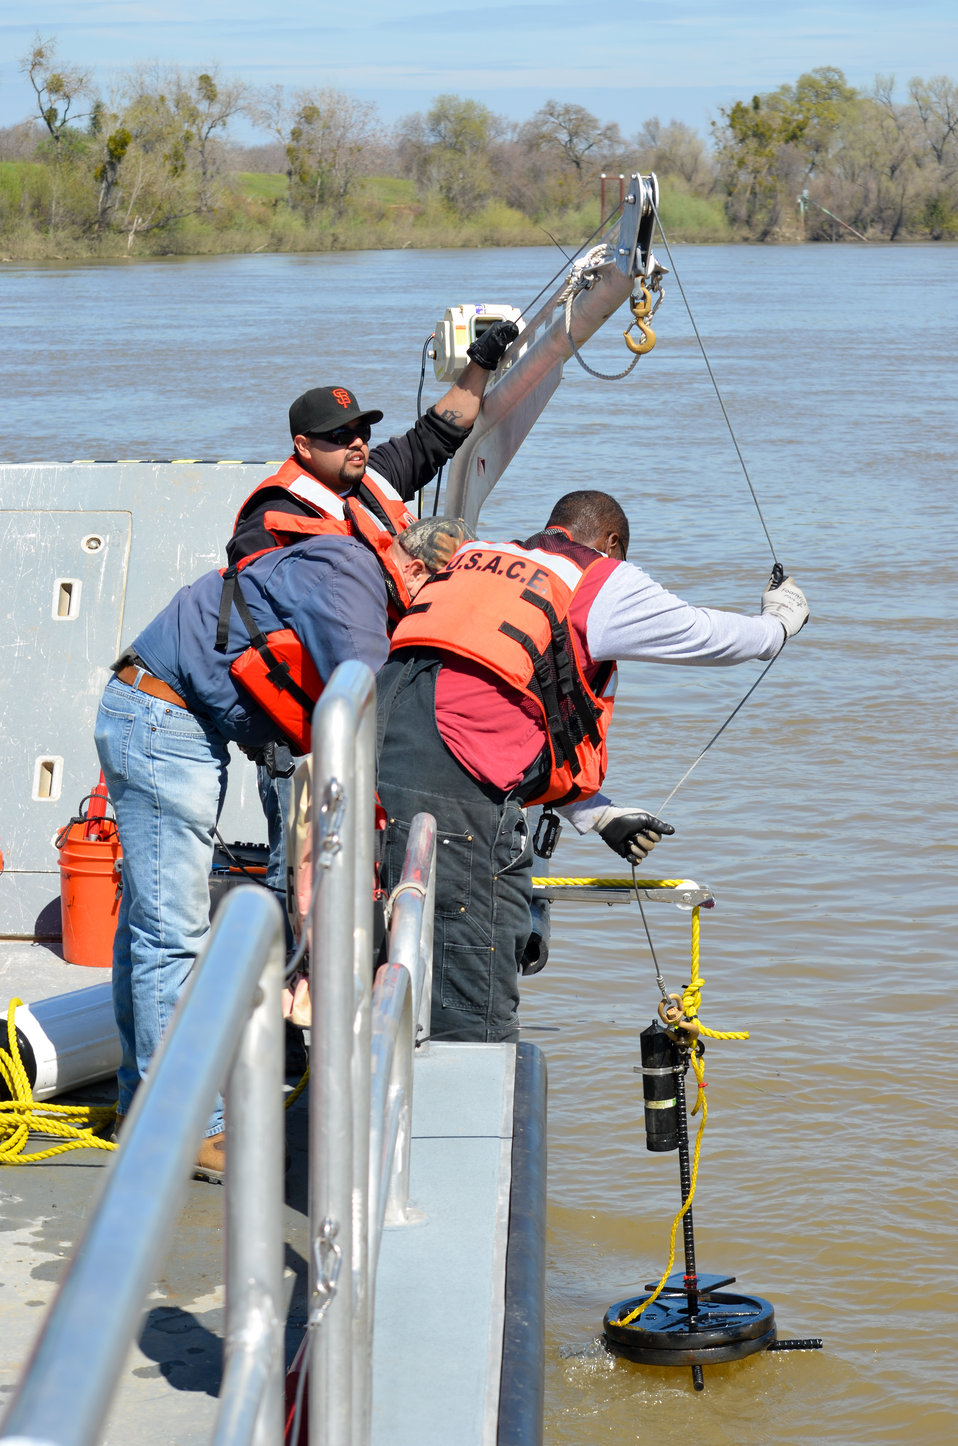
Deploying an acoustic receiver into the Sacramento River

Biologist Brian Luke (left) and crane operators Vince Diaz (center) and Tony Theard with the U.S. Army Corps of Engineers Sacramento District lower an acoustic receiver into the Sacramento River for testing near Sacramento, Calif., March 21, 2012. The Corps uses the receivers to evaluate habitat restoration work under its Sacramento River Bank Protection Project. A joint effort between the Sacramento District and the California Central Valley Flood Protection Board, the project repairs river bank erosion along the Sacramento River and its tributaries to reduce flood risk. The Corps restores habitat after its repair work and continually monitors fish behavior near the repair sites to ensure the health of the habitat.